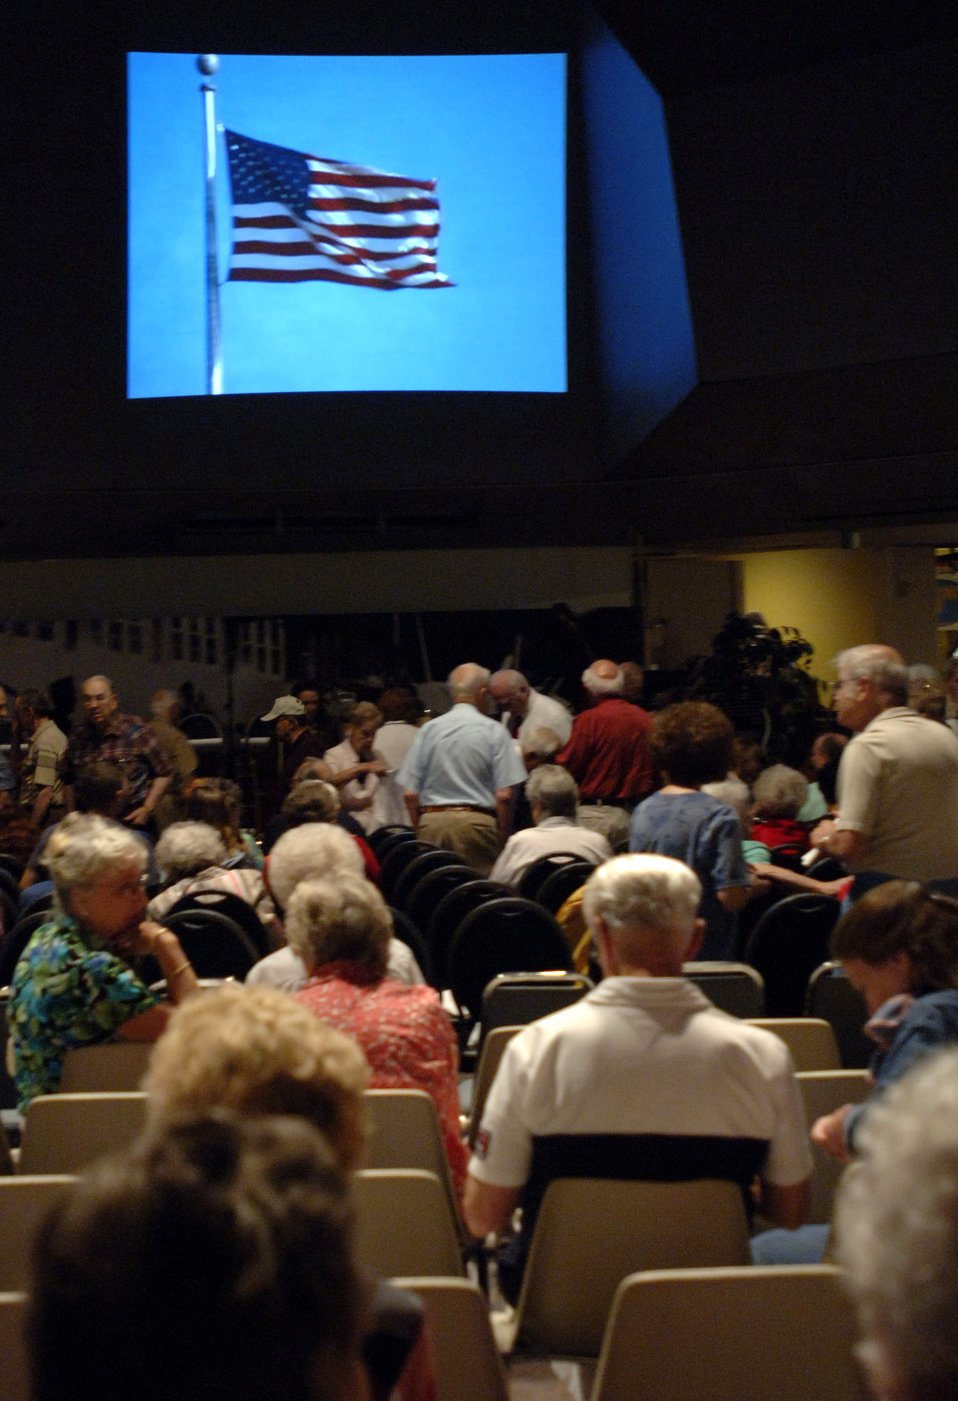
Memorial Day observances

More than 800 people from San Antonio came out to hear the Sentimental Journey Orchestra, under the direction of Ted Conerly, play big band swing music in a tribute to the nation's military members at the Institute of Texan Cultures on Sunday, May 28, 2006.